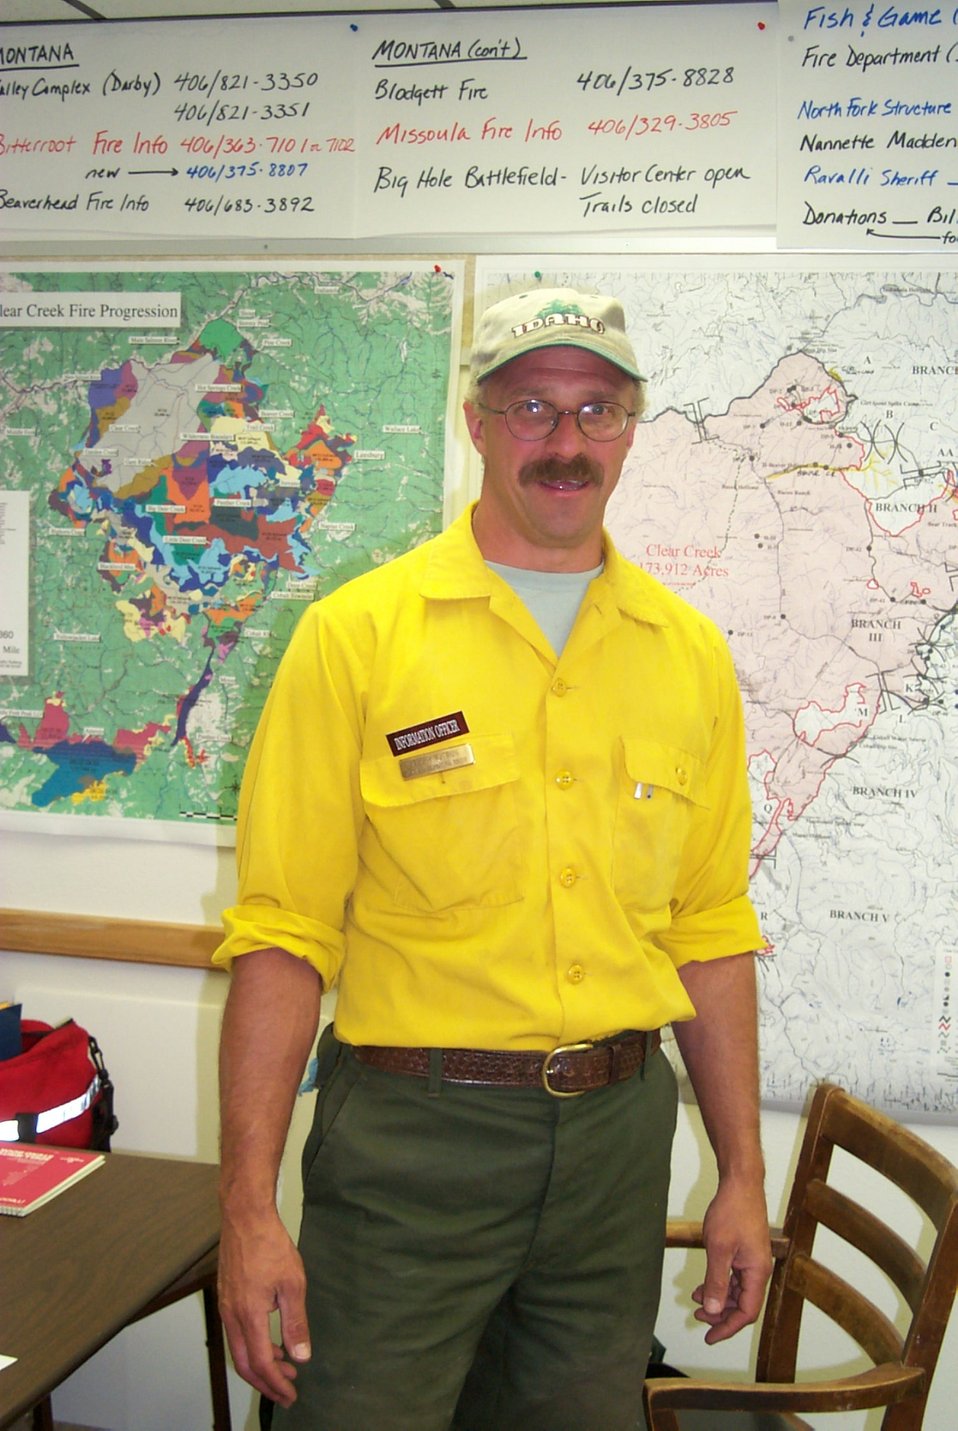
Fire Clearwater Fire Salmon Field Office USRD Upper Snake River District